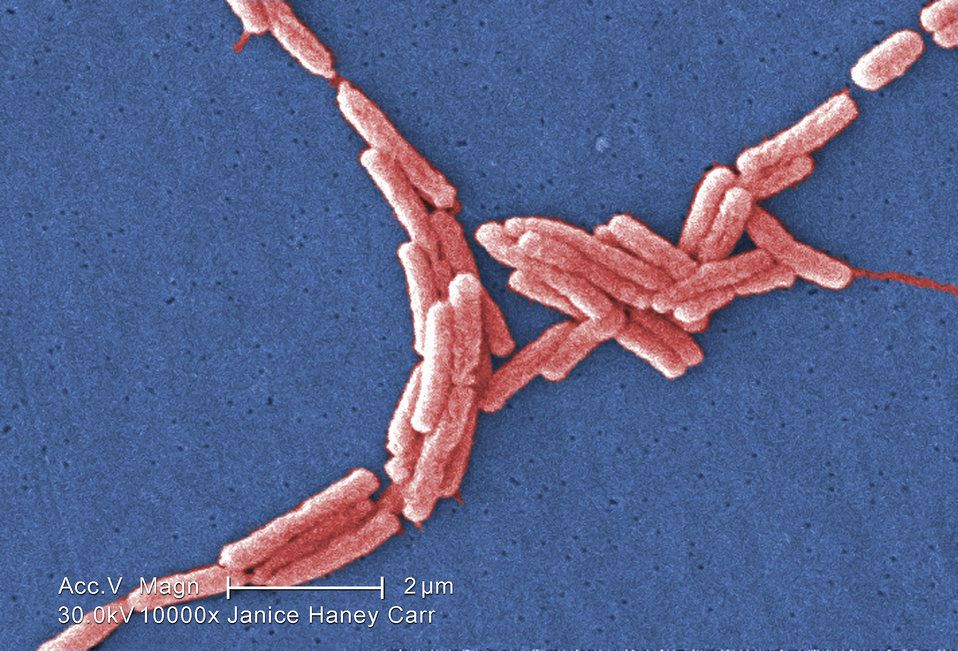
Under a moderately-high magnification of 10000X, this colorized scanning electron micrograph (SEM) depicted a number of Gram-negative Legionella pneumophila bacteria. Please see PHIL 11092 through 11152 for additional SEMs of these organisms, specifically PHIL 11138 for a colorized version of this image. Of particular importance, is the presence of polar flagella, and pili, or long streamers, which due to their fragile nature, in some of these views seem to be dissociated from any of the bacteria.